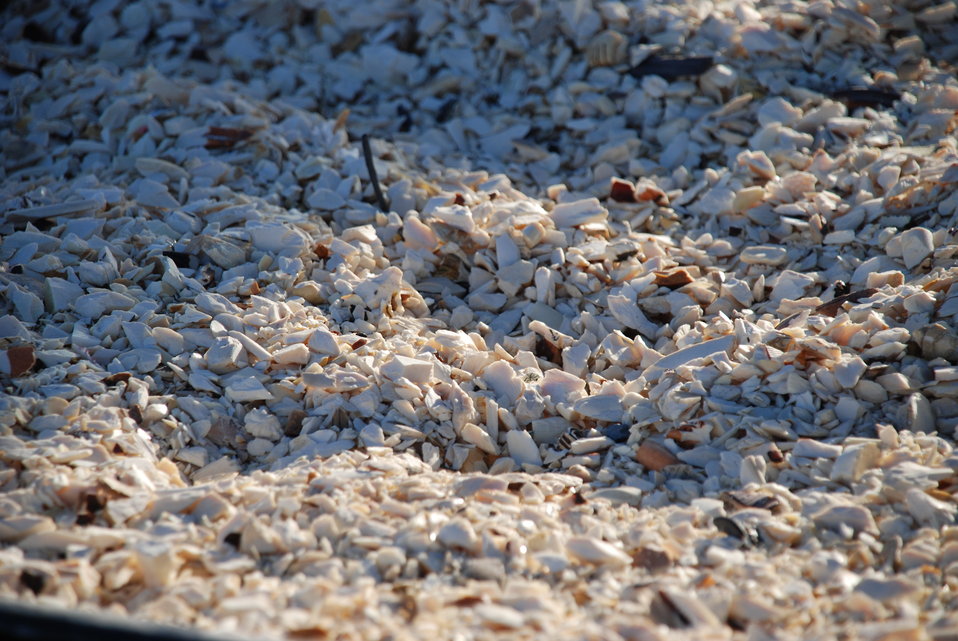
Ivory Crush 2013